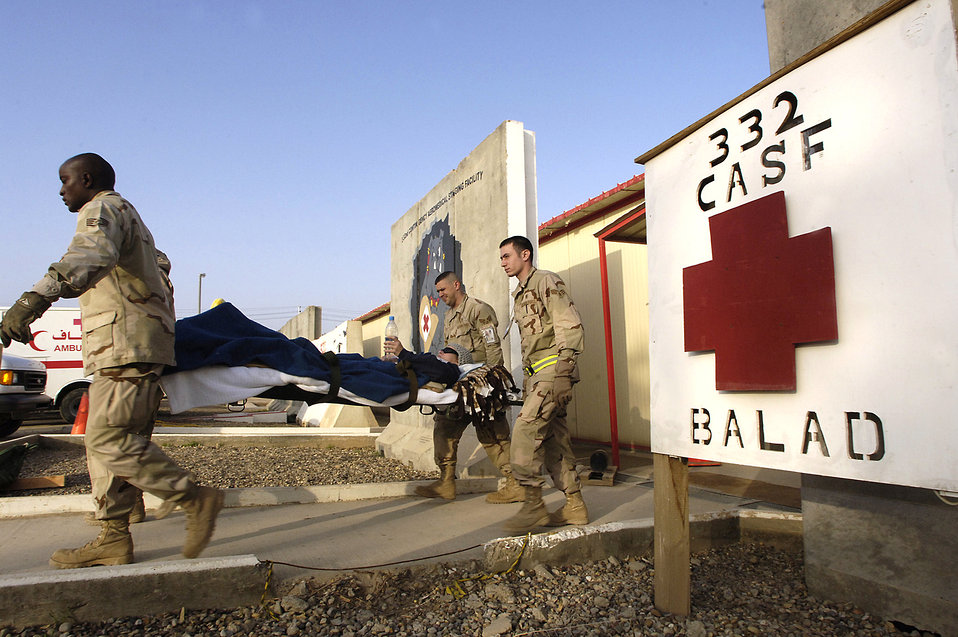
Reserve Airmen contributing to medical mission in Iraq

Airmen of the 332nd Expeditionary Medical Group carry a patient from the Contingency Aeromedical Staging Facility at Balad Air Base, Iraq, for transport to a waiting Air Force Reserve C-17 Globemaster III for a medical evacuation flight to Landstuhl Regional Medical Center in Germany. The Globmaster is from March Air Reserve Base, Calif.